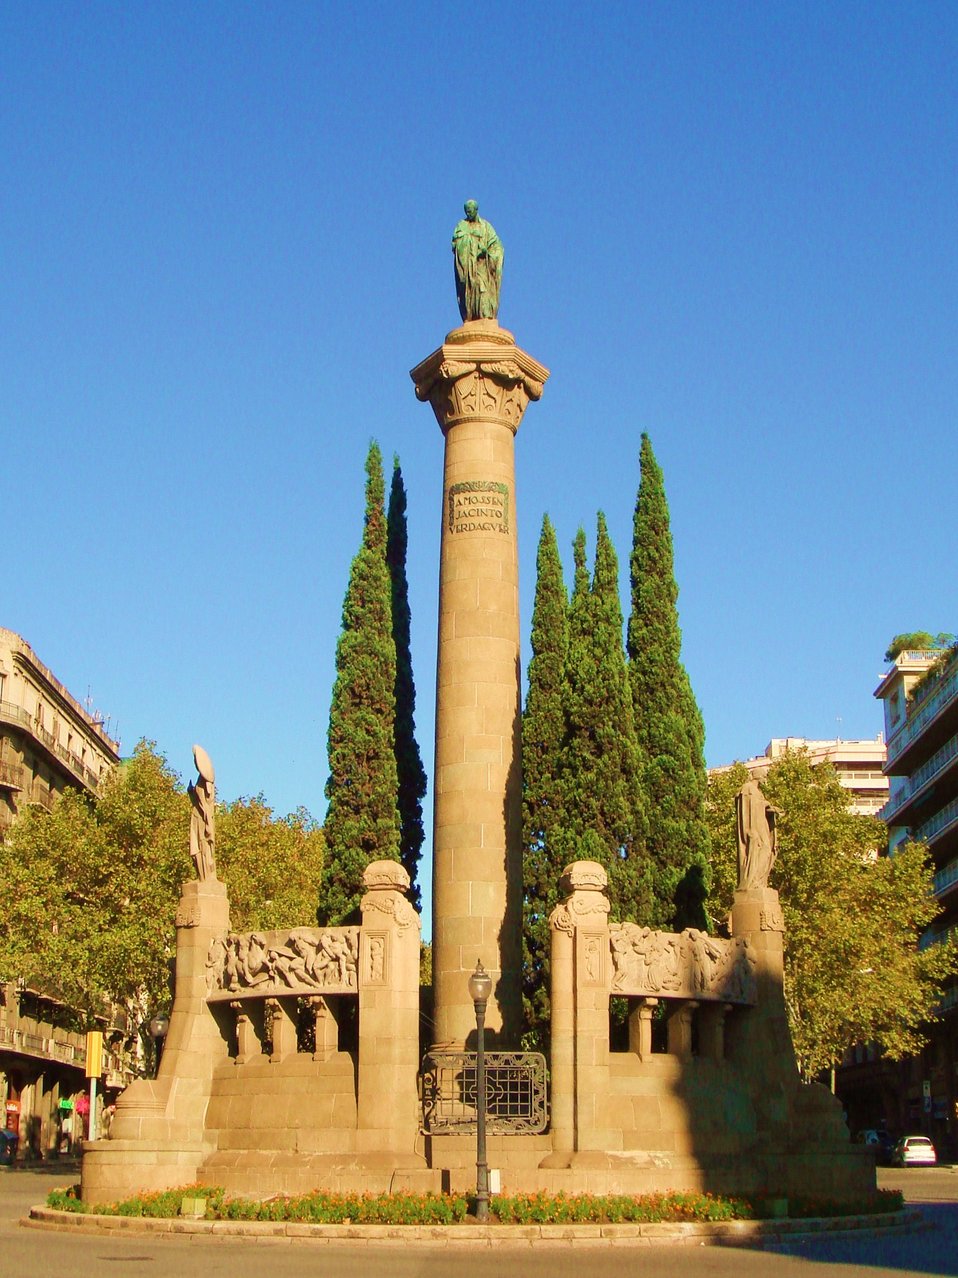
Verdaguer Monument is a monument dedicated to the Catalan poet Jacint Verdaguer. It is located at the namesake square on Diagonal avenue in the area of Dreta de l'Eixample neighborhood in Barcelona, Catalonia, Spain.